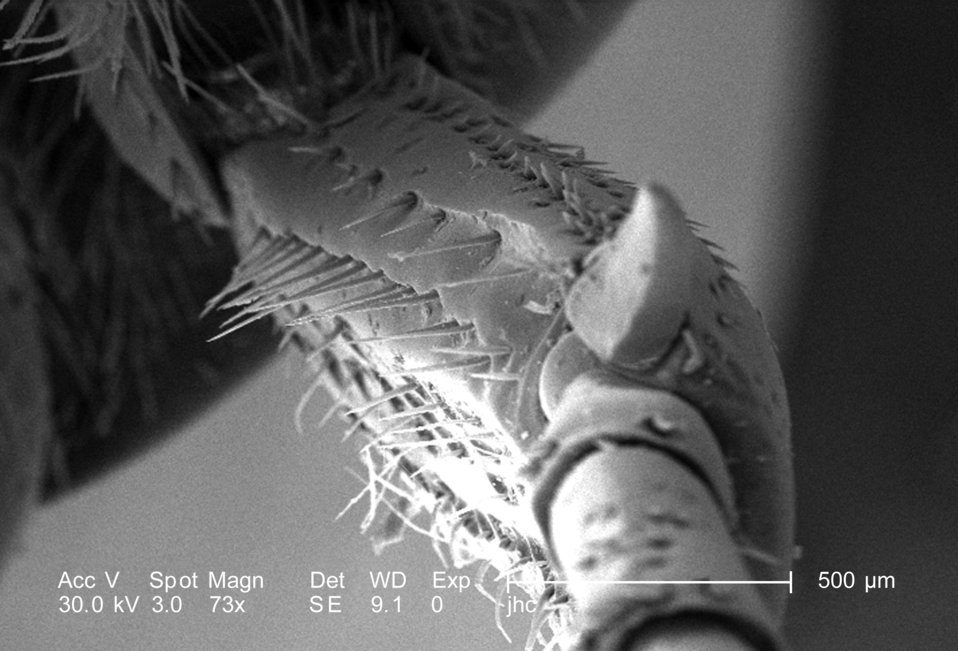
Under a low magnification of only 73x, this scanning electron micrograph (SEM) depicted the region of one of the legs of an adult 'figeater' beetle's, Cotinis mutabilis, leg, which included the tibiotarsal joint in the background, and the tarsopretarsal joint in the foreground. The numerous 'hairs', or setae, adorning almost all of the insect's exterior surfaces, act as sensory structures, supplying the organism with information about its environmental parameters.